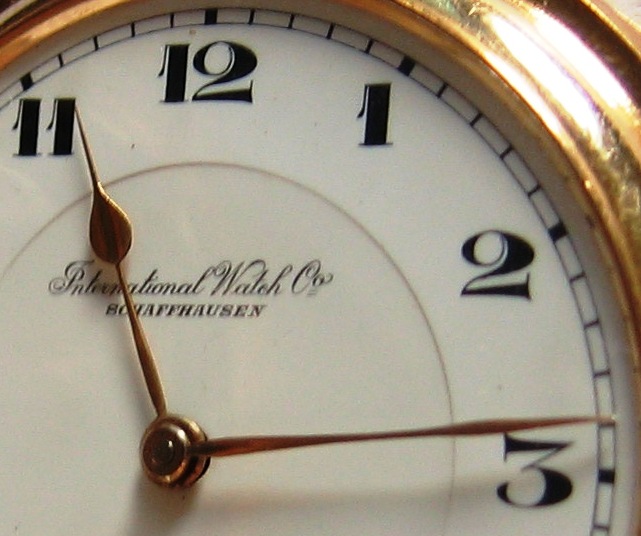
Deutsch: Eigenfotografie Erbstück meines Großvaters Willy Niederlein, Kaufdatum 1926 in Dresden